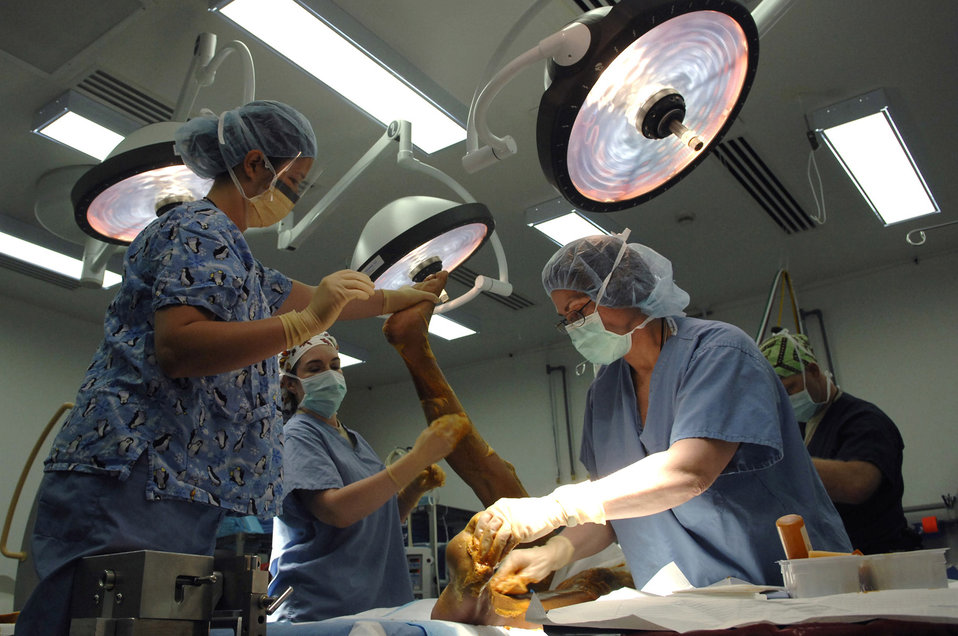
A sterile atmosphere

Orthopedic technicians at Joint Base Balad, Iraq, scrub down legs of an Iraqi policeman July 2 before performing follow-up surgery to correct an injury that is not healing correctly. They are assigned to the 332nd Expeditionary Medical Operations Squadron.